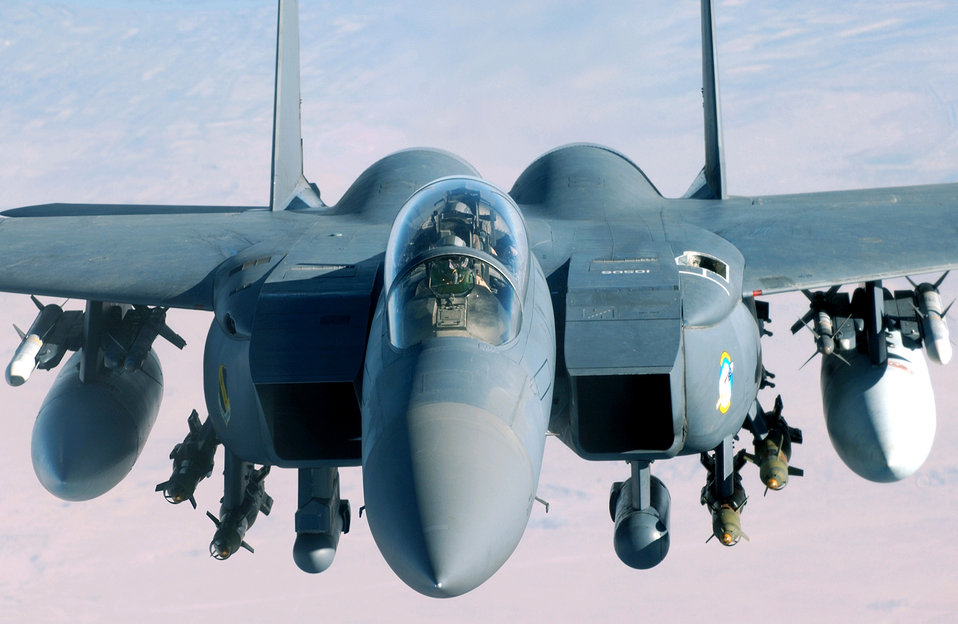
Strike eagle

OVER IRAQ -- An F-15 Strike Eagle prepares to refuel during a combat mission here July 23.